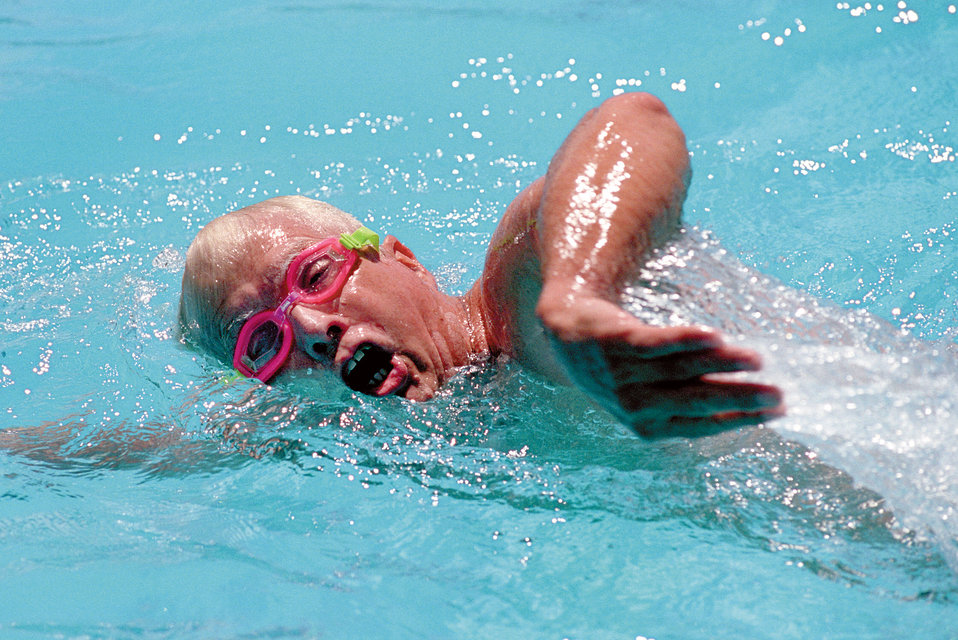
Swimming laps

TINKER AIR FORCE BASE, Okla. -- Retired Lt. Col. Rich Rasmussen carves his way from end to end at the fitness center pool here; a path he has made hundreds of times as the winner of a Red Cross fund-raiser for the past 12 years.